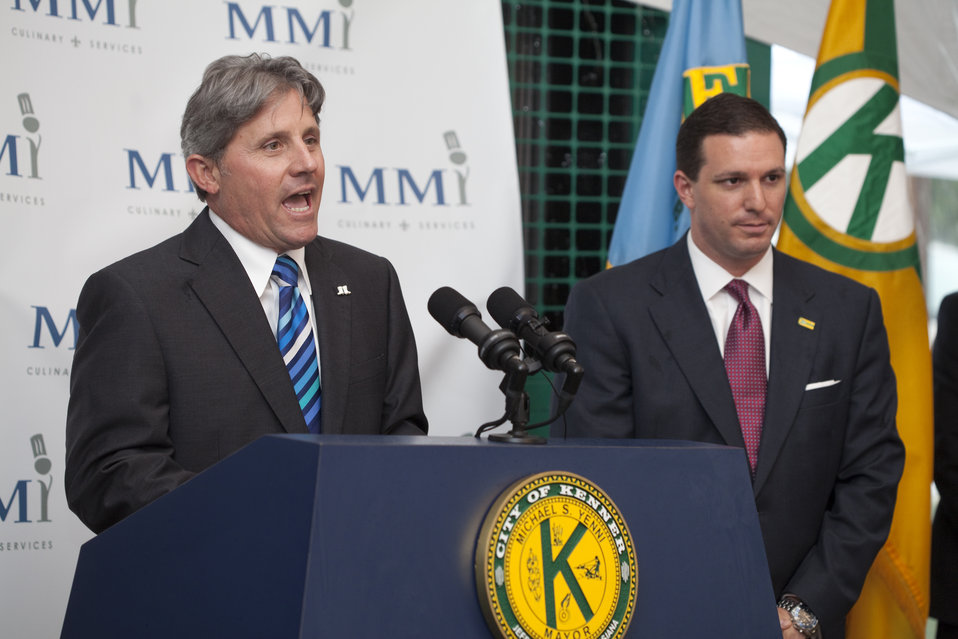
President of MMI, Incorporated Culinary Services Michael Maenza speaks during Agriculture Secretary Tom Vilsack's visit to MMI, Inc. in Kenner, LA on Wednesday, May 1, 2013.